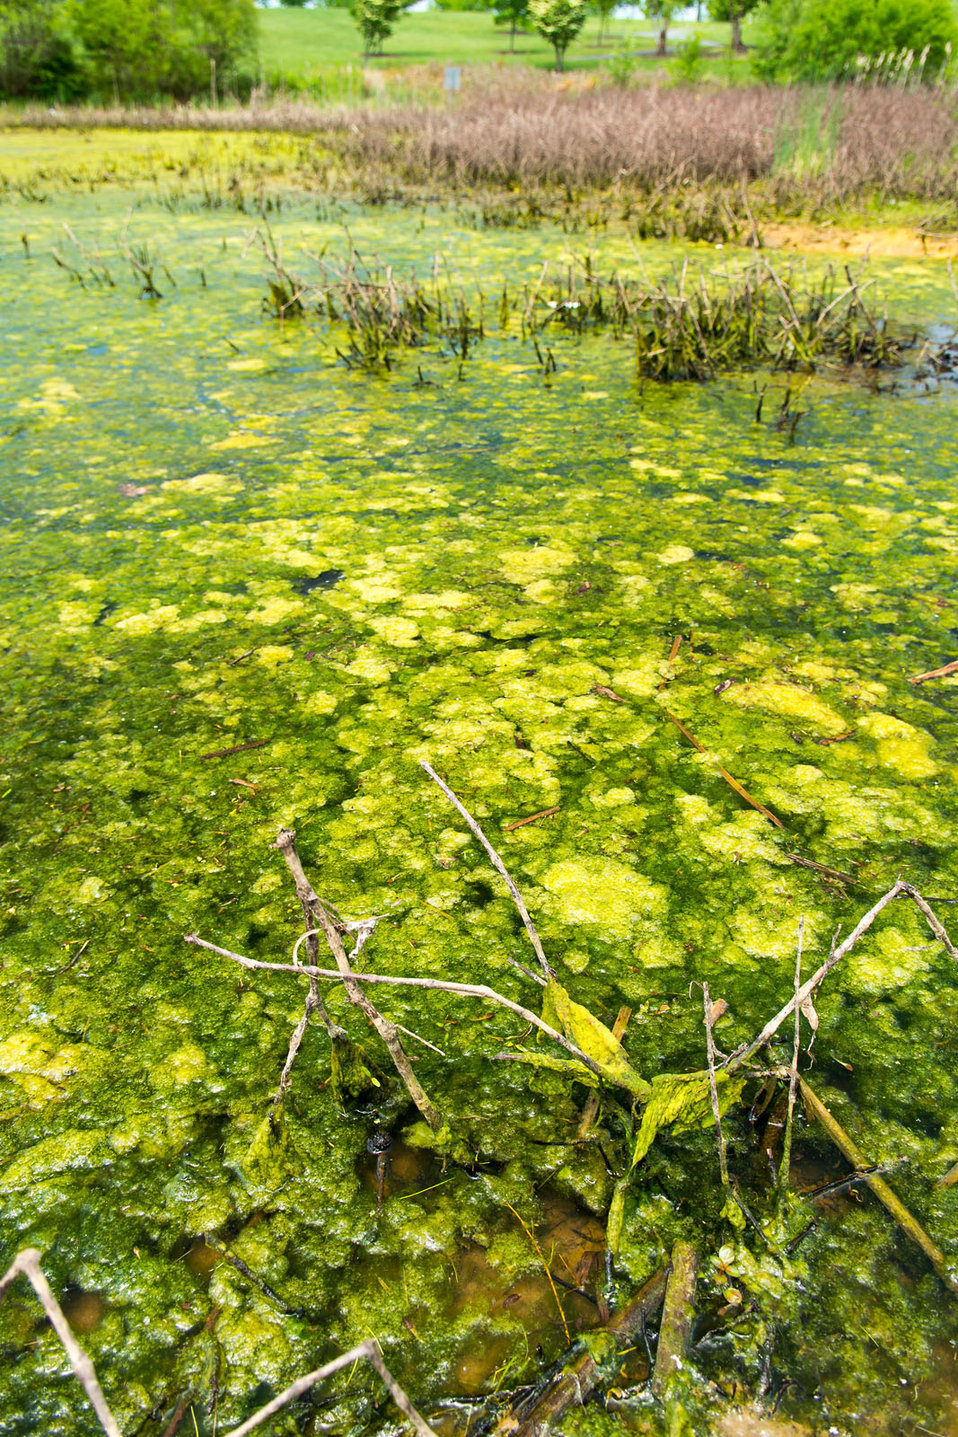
July 12, 2013 - A close look at a harmful algal bloom

Some algal blooms produce toxins that are dangerous to people. Harmful algal blooms are overgrowths of algae in water. Some produce dangerous toxins in fresh or marine water but even nontoxic blooms hurt the environment and local economies. Harmful algal blooms can produce extremely dangerous toxins that can sicken or kill people and animals, create dead zones in the water, raise treatment costs for drinking water and hurt industries that depend on clean water.